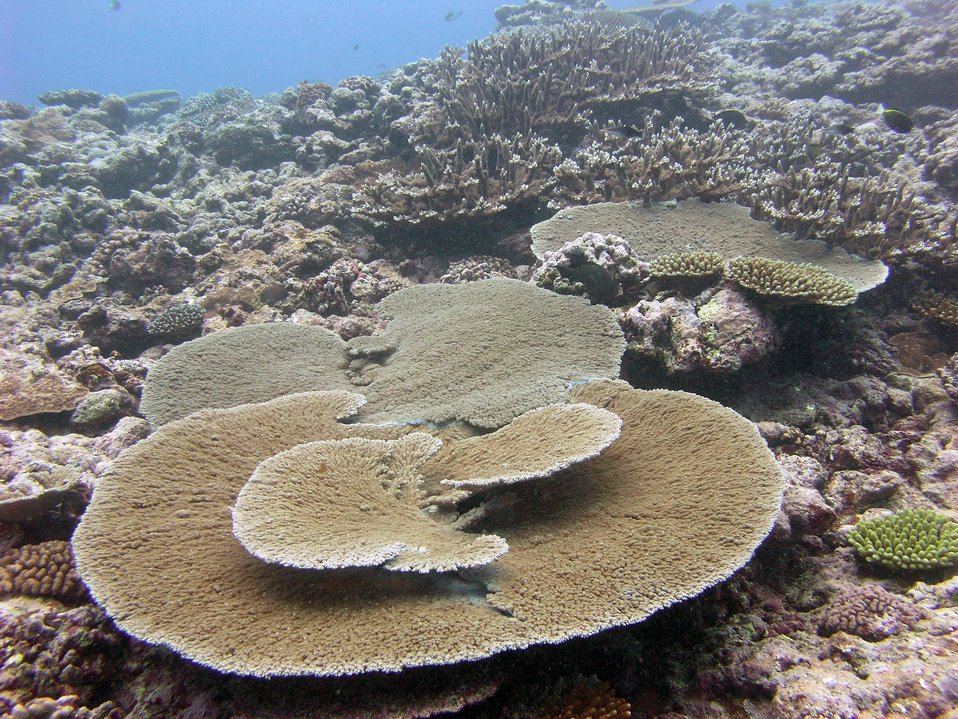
Large tabular coral (Acropora sp.)